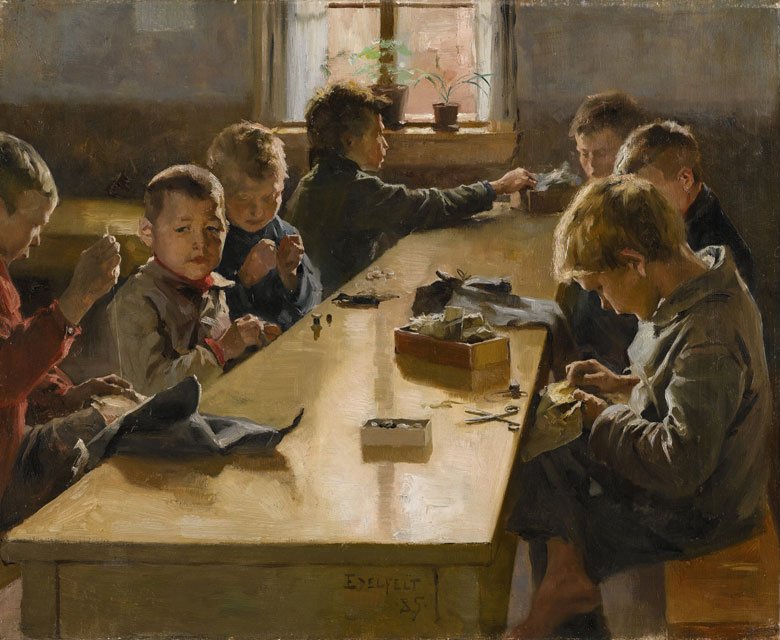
'The Boys' Workhouse, Helsinki' by Finnish artist Albert Edelfelt, 1885